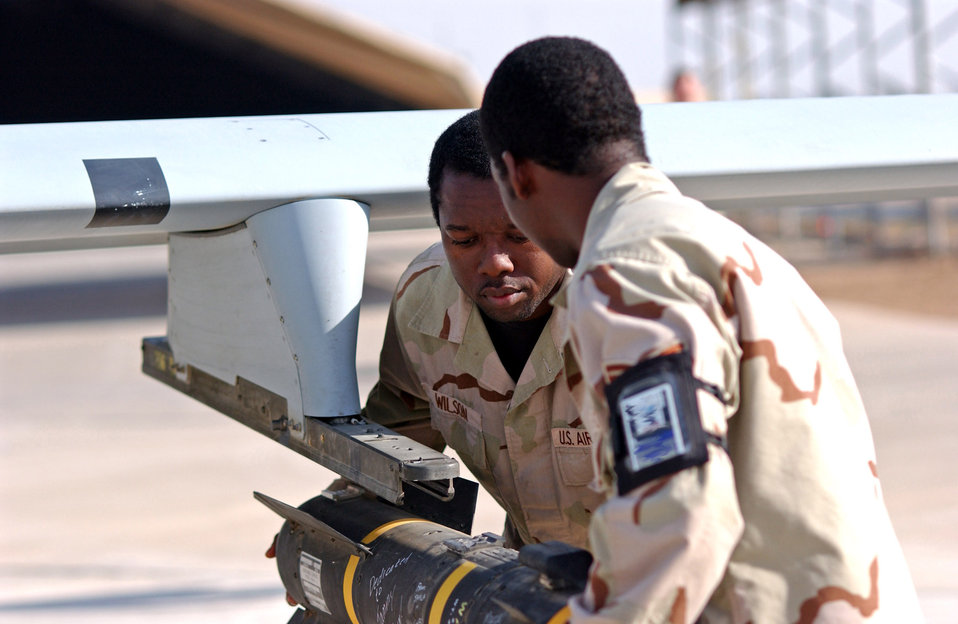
Prowling Predators

BALAD AIR BASE, Iraq (AFPN) -- (Left to right) Staff Sgt. Jwann Wilson and Staff Sgt. Bryan Larry, remove a Hellfire missile from an MQ-1 Predator after it returned from a mission. The sergeants, of the 46th Aircraft Maintenance Unit, do this so other unit maintainers can perform maintenance on the aircraft. They are deployed from Creech Air Force Base, Nev.